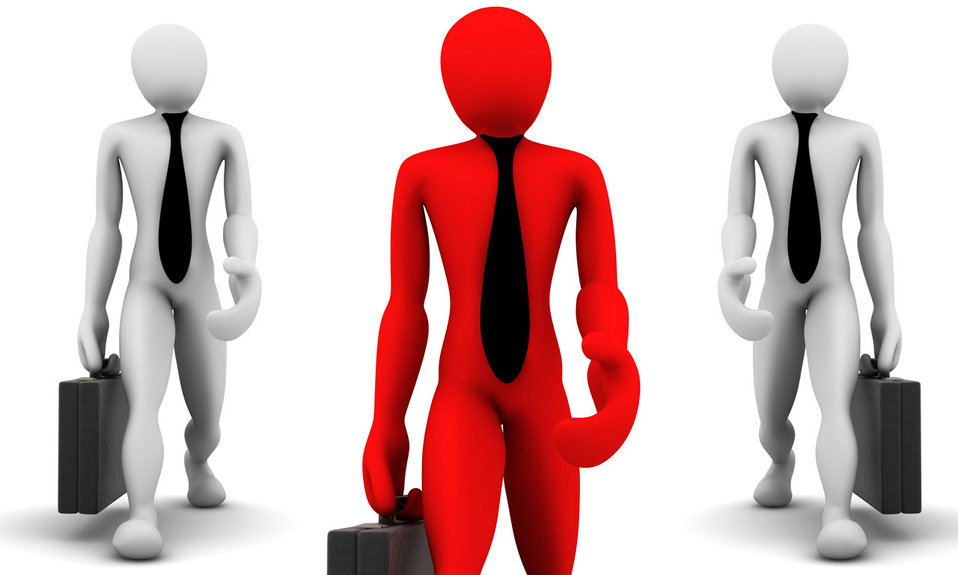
Three business men

Business men.